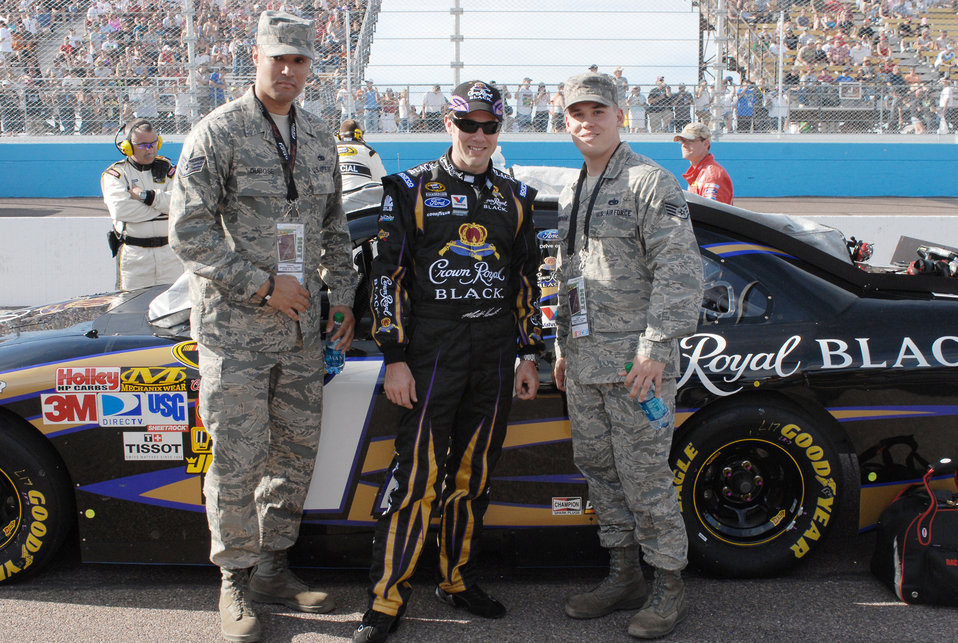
Airman gets NASCAR

Staff Sgts. Damon Thurman (right) and Charlton Dubose pose with NASCAR driver Matt Kenseth April 10, 2010, during the Subway Fresh Fit 600 NASCAR race at the Phoenix International Raceway. Sergeants Thurman and Dubose are 56th Maintenance Group quality assurance inspectors.